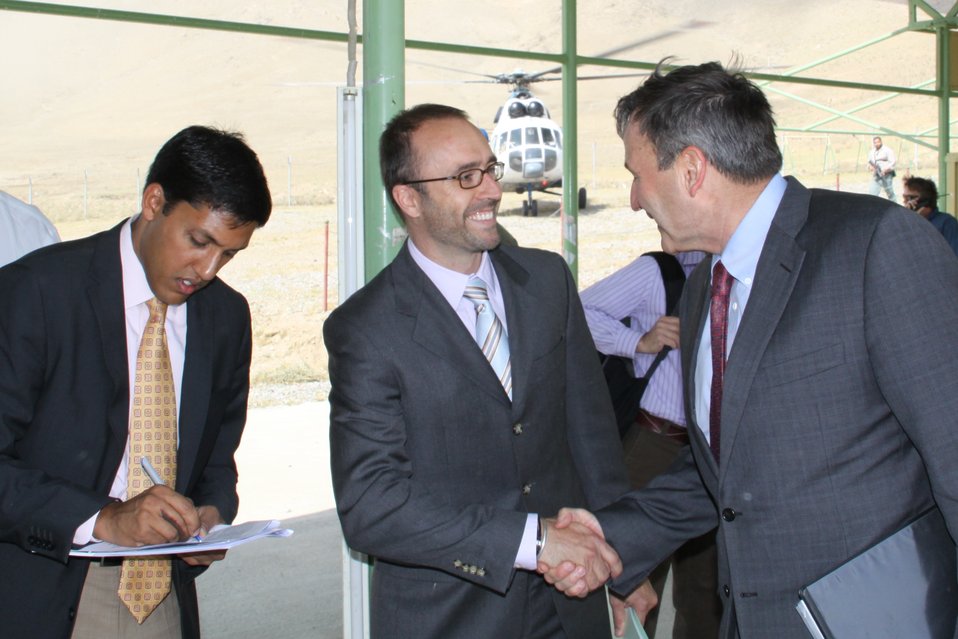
Badam Bagh Farm